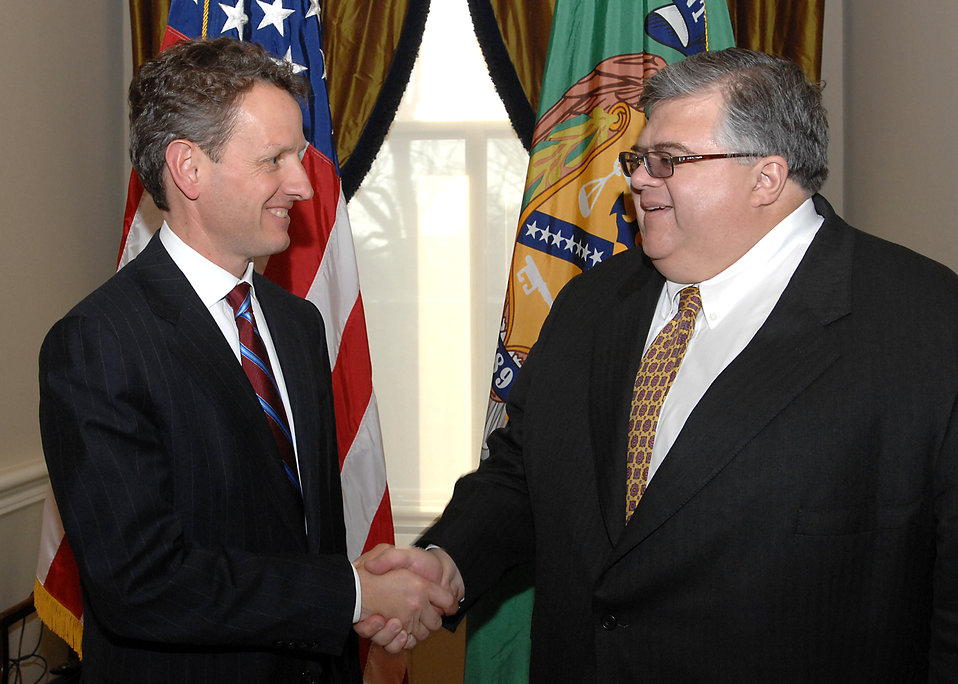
Mexican Finance Minister Agustin Carstens

Secretary Geithner met with Mexican Finance Minister Agustin Carstens at the U.S. Department of the Treasury on February 9, 2009 to discuss strengthening U.S.-Mexican economic and financial cooperation and to exchange views on the U.S. and Mexican responses to the global financial crisis.